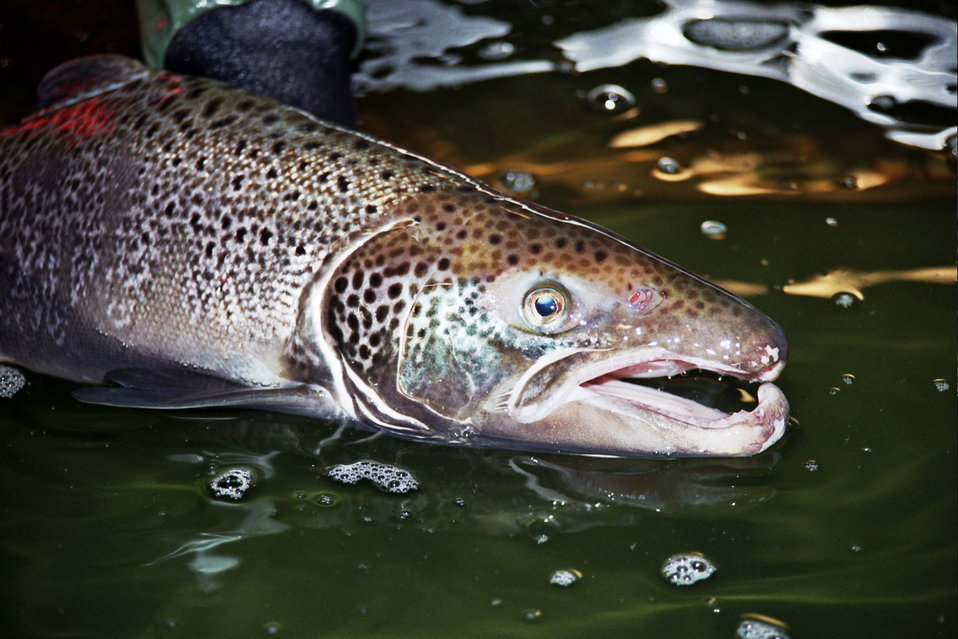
Atlantic Salmon Male

Atlantic salmon showing the kype (hook) in the lower jaw, a characteristic of the male during spawning season. The kype, which is reabsorbed at the end of the spawning season, is used in battle with rival mates.